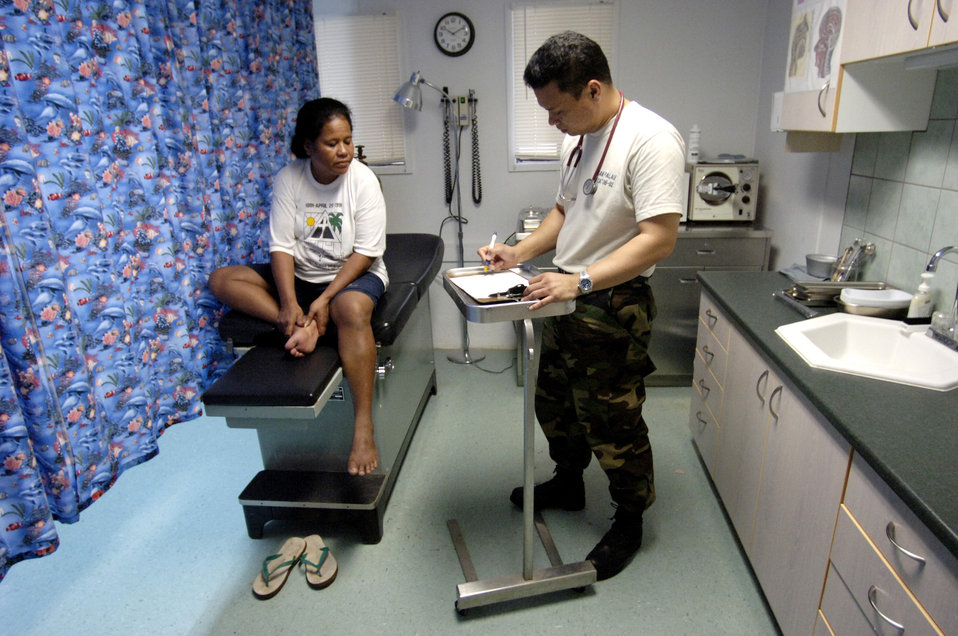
Palau civic action team

BABLEDAOB, Palau (AFPN) -- Capt. Dan Calderon examines a local Palauan woman. He is a physician assistant with the Palau civic action team here. The mission of the program is twofold. It aids host nations in their basic infrastructure development and it provides a favorable U.S. military presence through community construction, apprentice training, a medical civic action program and community relations.